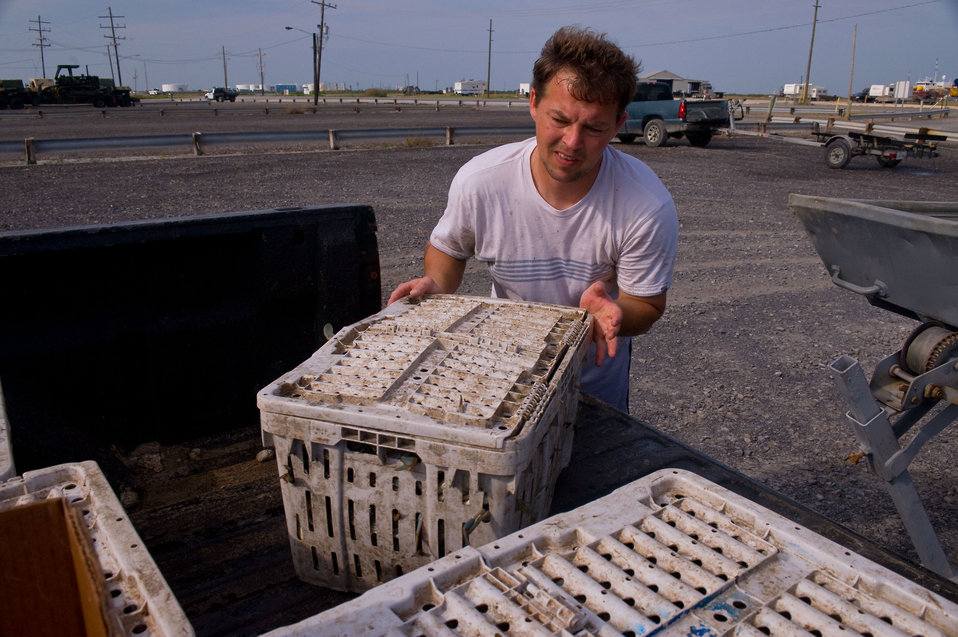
May 14, Already a tough year for crabbing

Christopher Fonseca from Lafourche, La, returns with a meager catch of crab. He expressed worry about being shut down, after a tough year already.